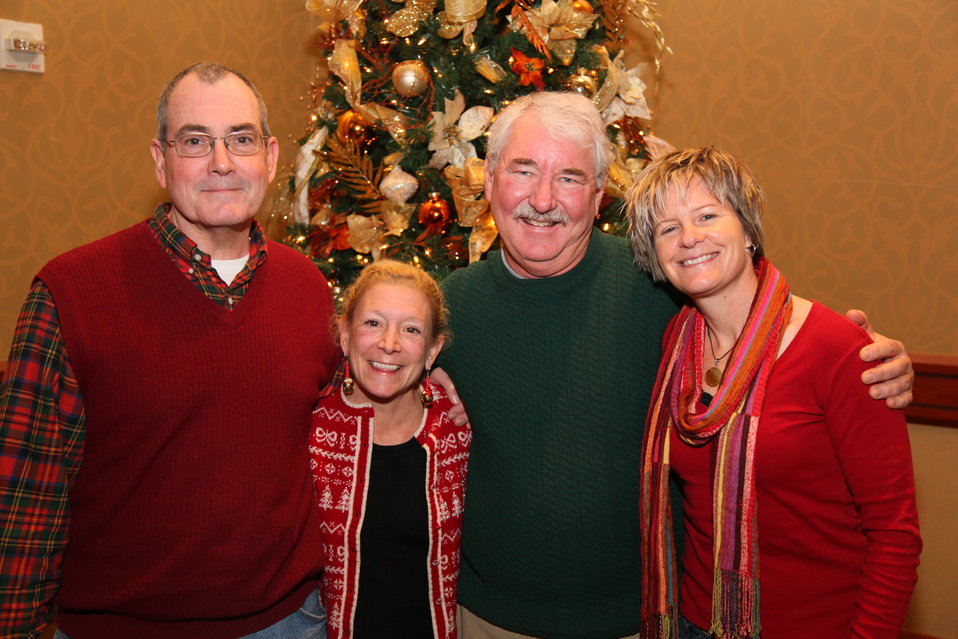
Sacramento District Holiday Party 2011